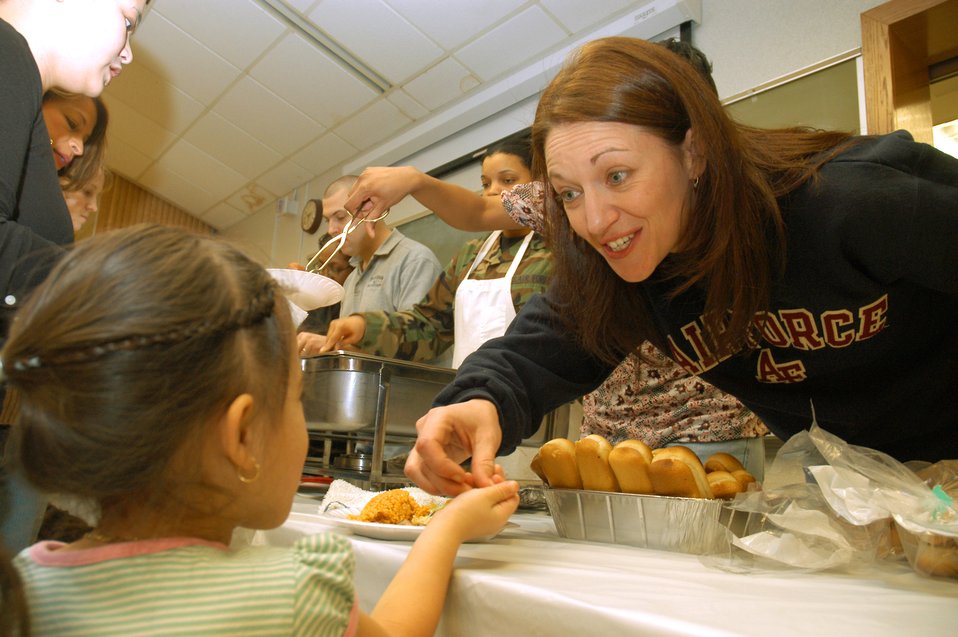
Deployed Airmen's families are not alone

Tech. Sgt. Melissa Hargis examines a piece of valentine candy that Mikayla, age 3, brought to show her. Mikayla and her mother, Kamille Benitez, attended the deployed spouses' dinner at the Peterson Air Force Base, Colo., earlier this month as part of the base's efforts to support spouses of deployed Airmen. Mikayla's father, Staff Sgt. Michael Benitez, is deployed to Afghanistan from the 50th Security Forces Squadron at Schriever Air Force Base, Colo. Sergeant Hargis is assigned to the 21st Medical Support Squadron here.